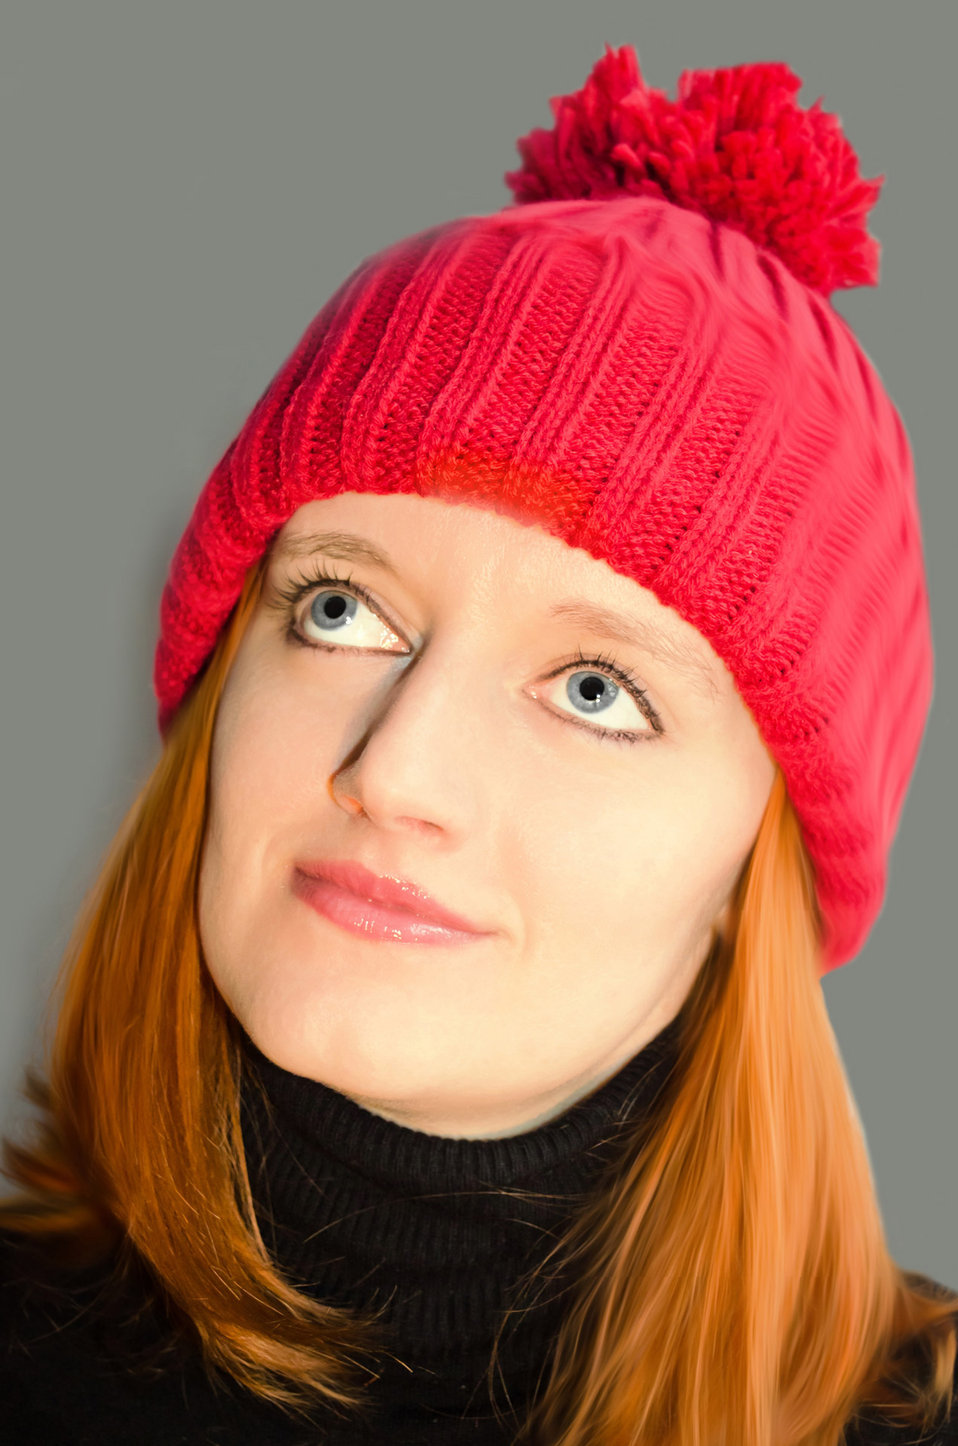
Woman and red hat.